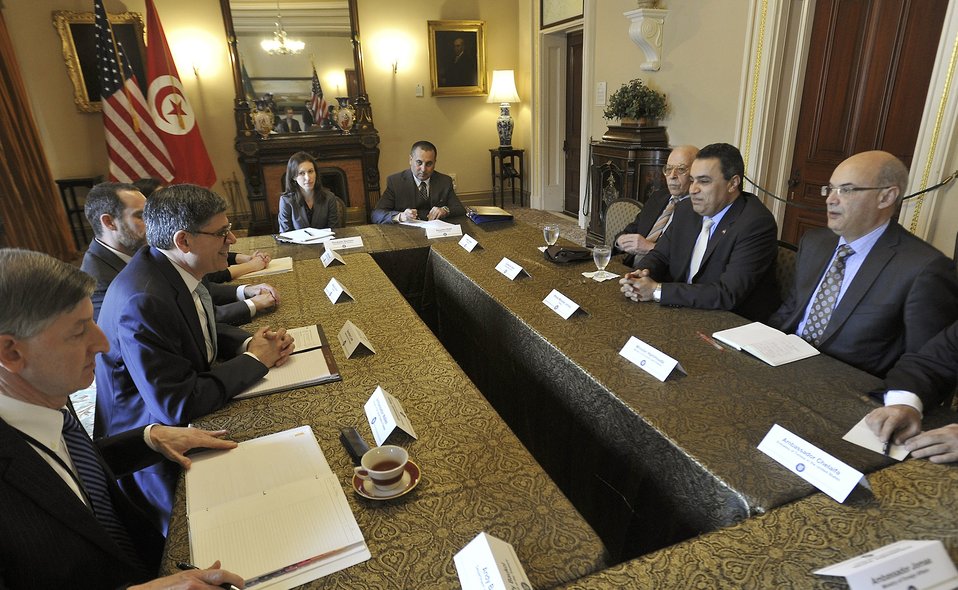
Secretary Lew meets with Tunisian Prime Minister

April 4, 2014 - Secretary Lew meets with Tunisian Prime Minister Mehdi Jomaa at Treasury. Finance Minister Hakim Ben Hammouda and Governor of the Central Bank of Tunisia Chedly Ayari also joined.